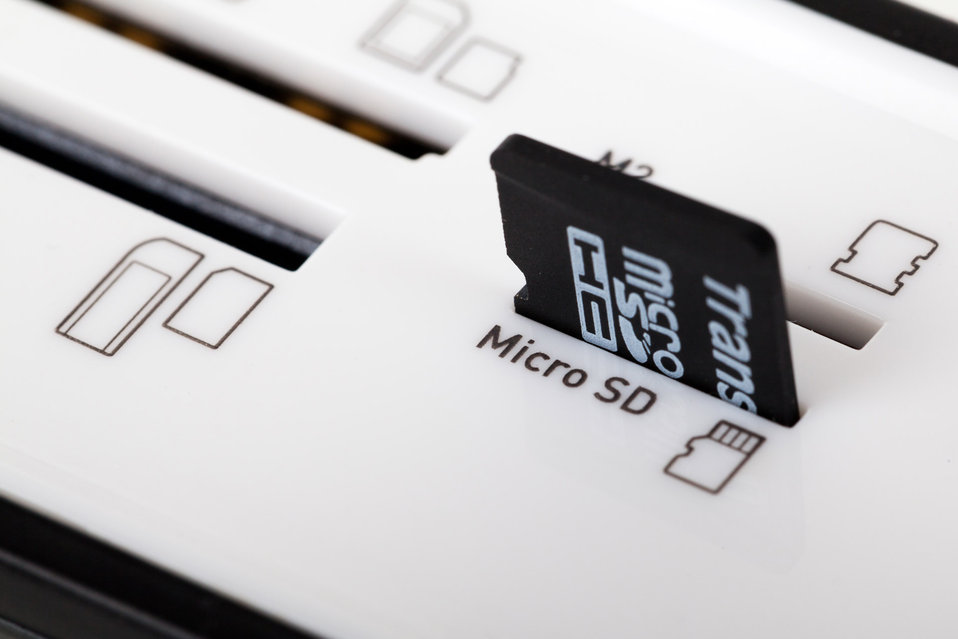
Micro sd card in a reader

Micro sd card in a memory card reader.